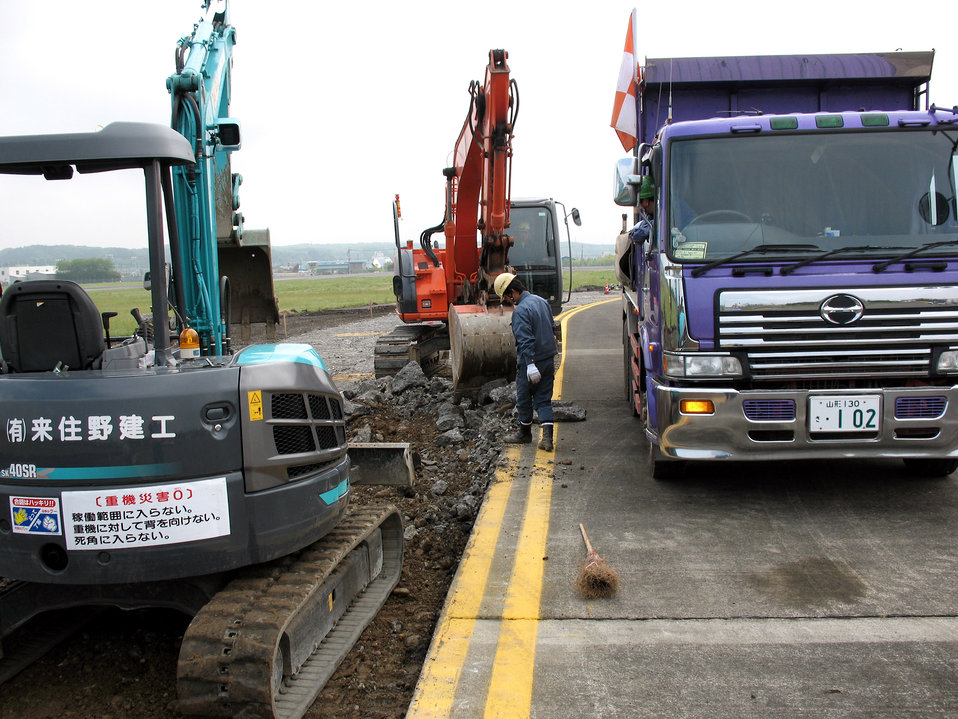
Yokota shouldering runway taxi project

Japanese contractors work together to tear apart chunks of Yokota Air Base flightline's northwest shoulder and taxiway in preparations to repave it. Constant upkeep of the flightline is imperative to keep the base mission-ready.